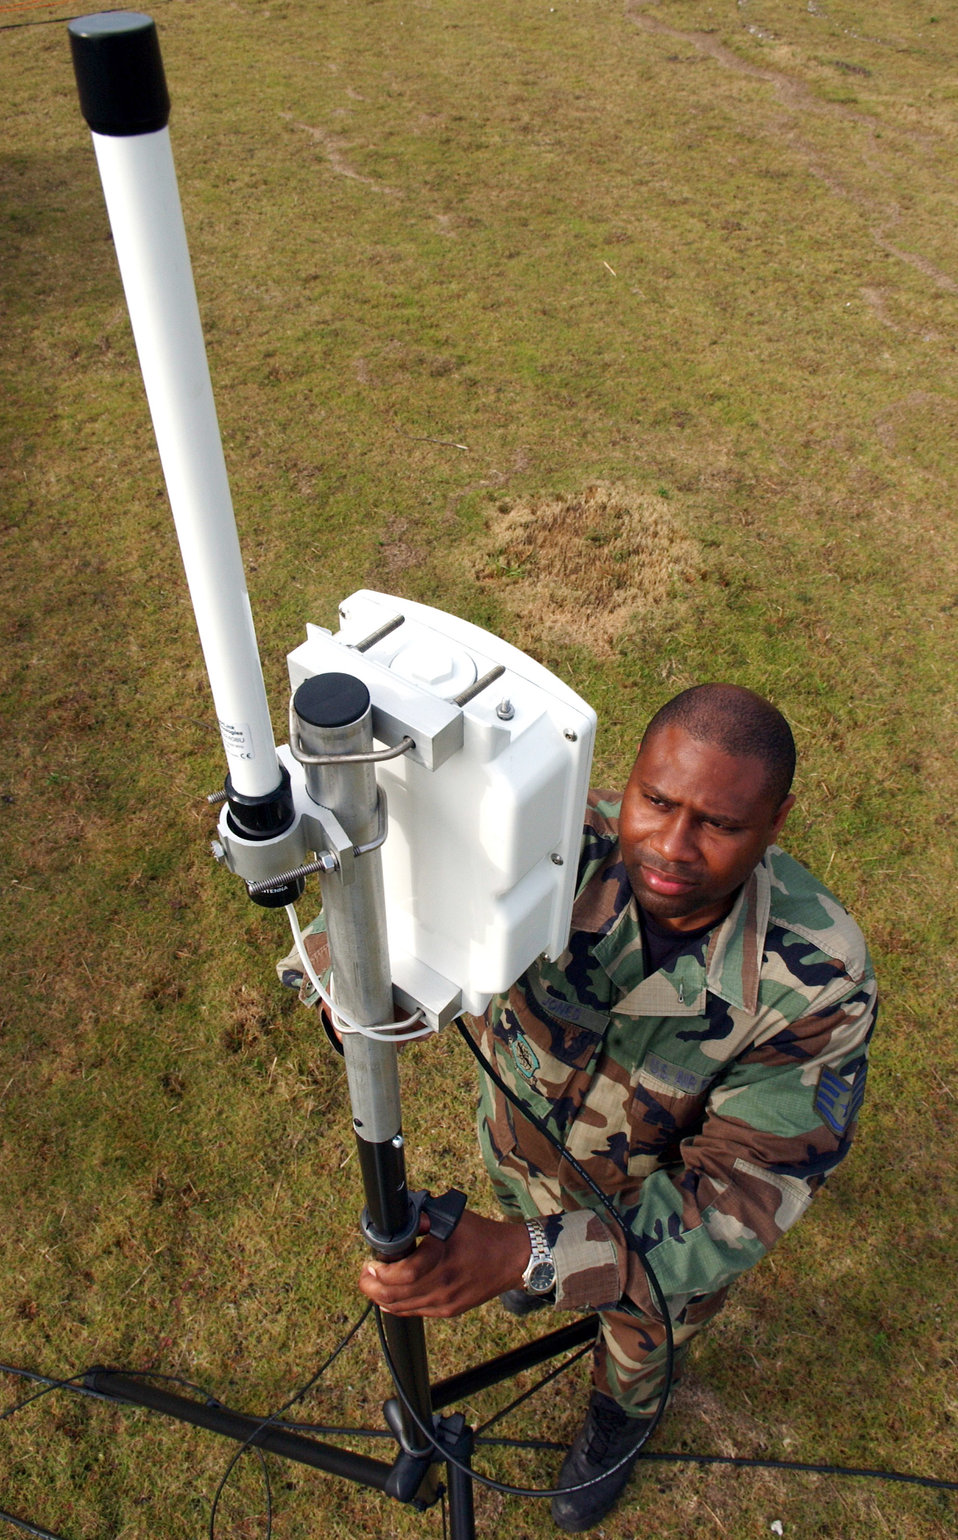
Jump Start

Staff Sgt. Shawn Jones checks the receiver for a voice system to allow wireless communications for Exercise Jump Start on Thursday, April 13, 2006, at Homestead Air Reserve Base, Fla. The communications exercise is designed to familiarize troops from Reserve, Guard and active military units with equipment they wouldn't normally use. Sergeant Jones is a ground radio technician with the 514th Communications Squadron at McGuire Air Force Base, N.J. U.S. Air Force photo/Airman 1st Class Bradley Lail)